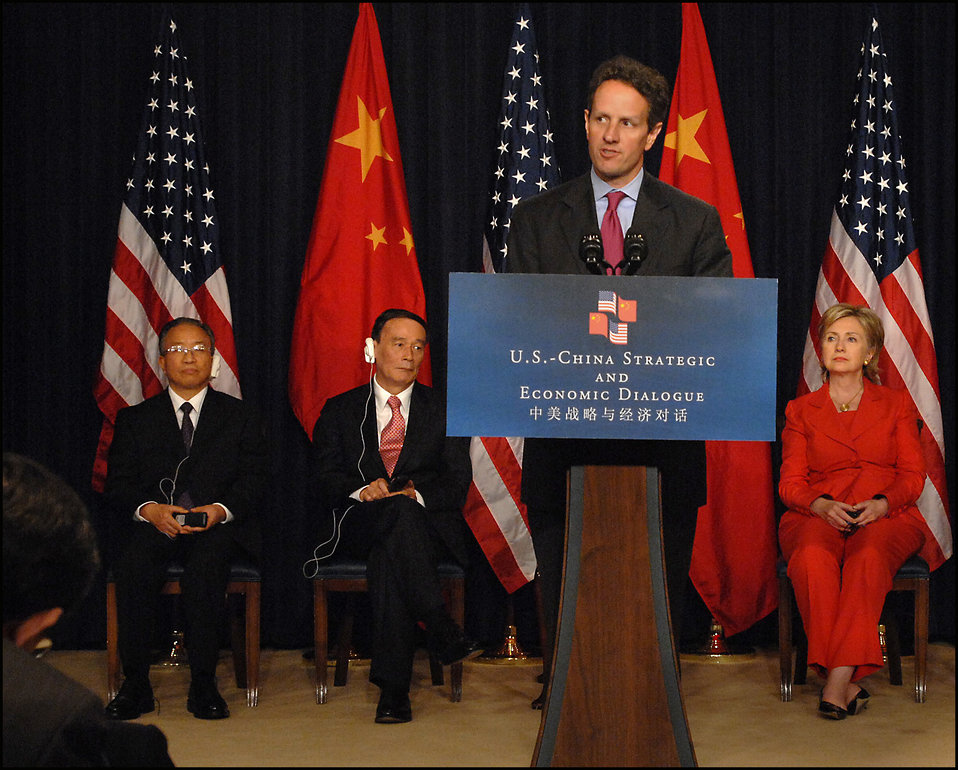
SandED: July 27-28, 2009

Secretary Geithner speaking at the conclusion of the first U.S.-China Strategic and Economic Dialogue held in Washington, D.C. on July 27 and 28.